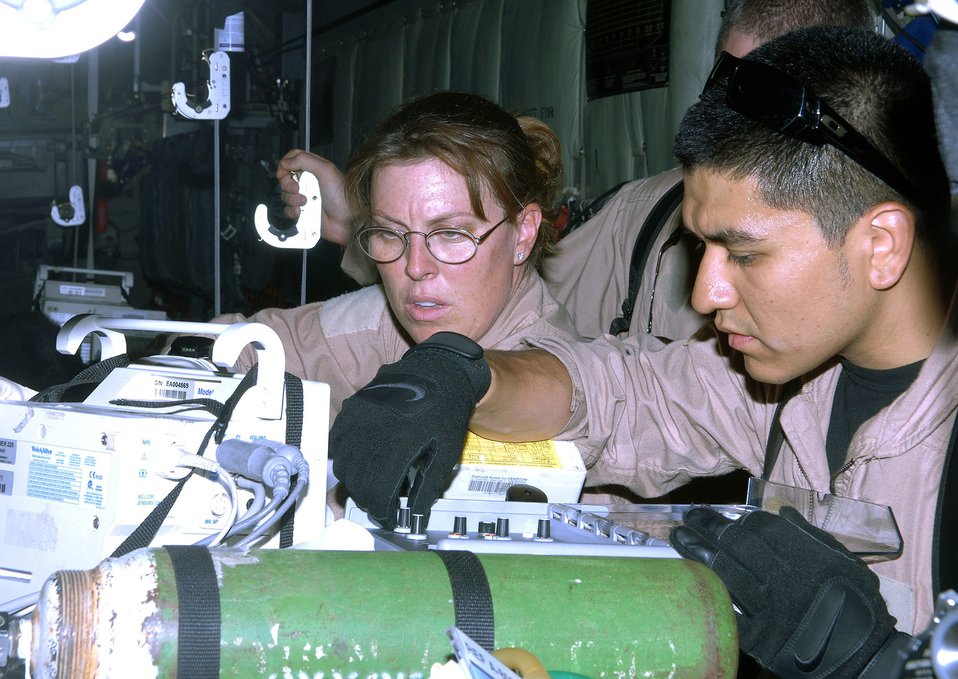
Saving servicemembers' lives one flight at a time

Capt. Jenna Jamison and Senior Airman Roy Aguilar stabilize a critical patient after loading him on a C-130 Hercules June 5 at Forward Operating Base Salerno, Afghanistan, bound for Bagram Air Base, Afghanistan. Captain Jamison is an intensive care nurse and Airman Aguilar is a respiratory therapist. They are deployed from Wilford Hall Medical Center, Lackland Air Force Base, Texas.